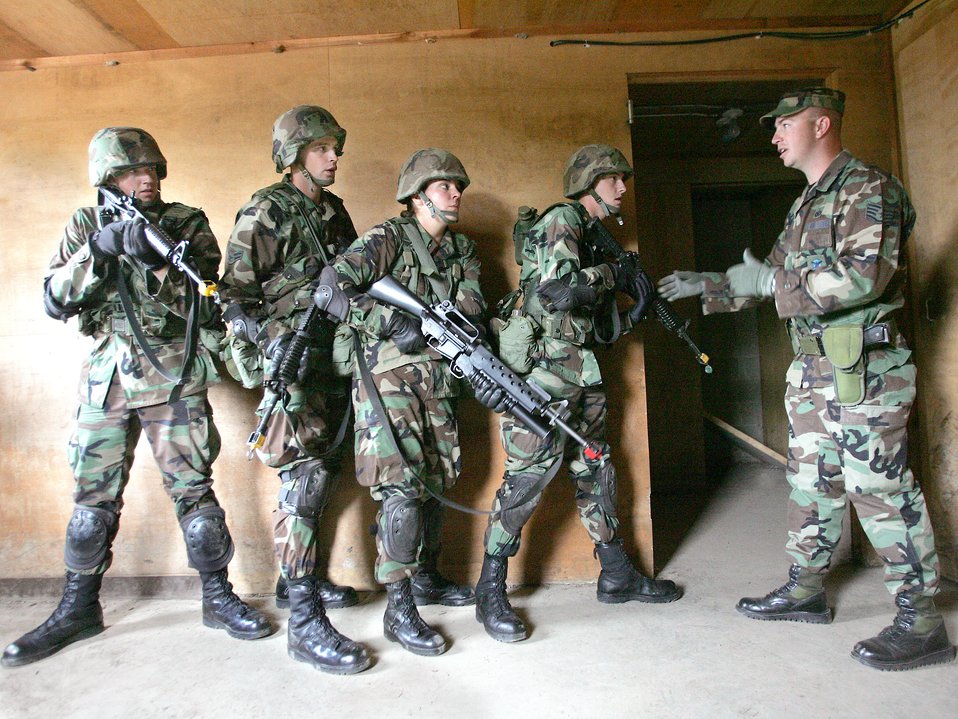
Urban training

Staff Sgt. Brandon King instructs students on building search and clearing procedures during a training session at Camp Bullis, Texas, Tuesday, March 7, 2006. Sergeant King is an instructor with the 343rd Training Group at Lackland Air Force Base, Texas.